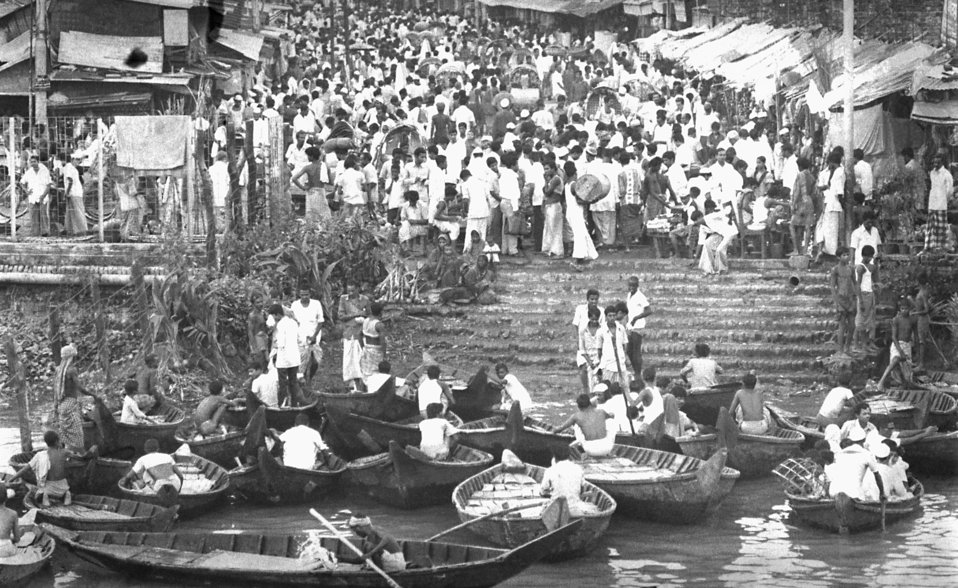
This photograph depicted a Bangladesh marketplace adjacent to the banks of a river. The water taxis were in the process of bringing market attendees to and from the site. Note that almost all of the shoppers were male. This image was part of a series provided by Dr. Stan Foster, and captured by Pierre Claquin, M.D., B.A.C., who at the time was a member of the World Health Organization's Smallpox Eradication Program. It was part of a series photographed by former E.I.S. officer, Stanley O. Foster M.D., M.P.H., and was one of a series entitled 'The Story of One Smallpox Jeep', which depicted the travails faced by the jeep, and its occupants of public health practitioners, as they road through the Bangladesh countryside in an attempt to eradicate smallpox from the country.